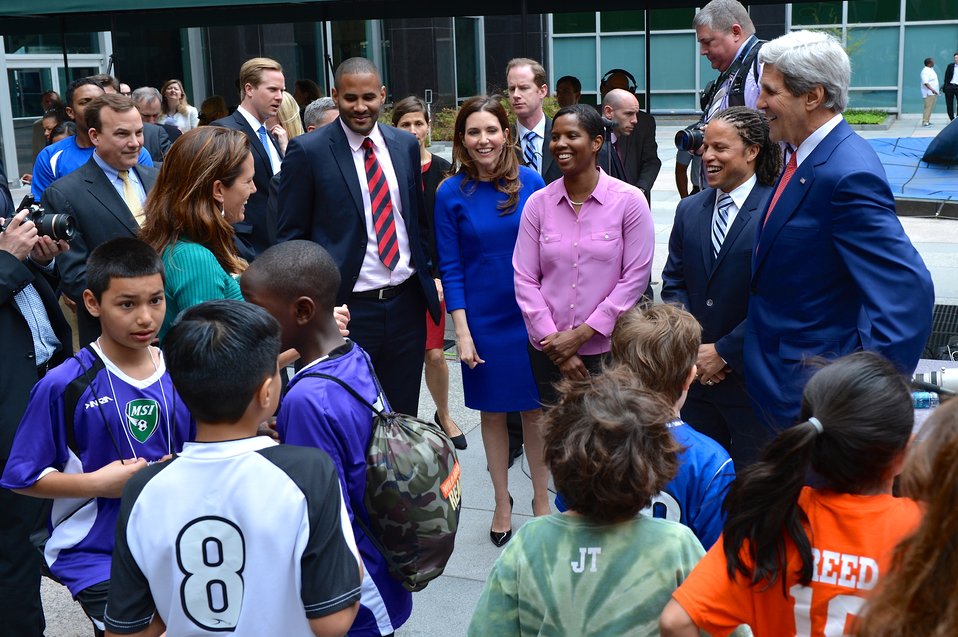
Secretary Kerry Speaks With Sports Envoy Julie Foudy

U.S. Secretary of State John Kerry speaks with Sports Envoy Julie Foudy and athletes from local youth soccer organizations at the U.S. Department of State in Washington, D.C., on April 14, 2014.